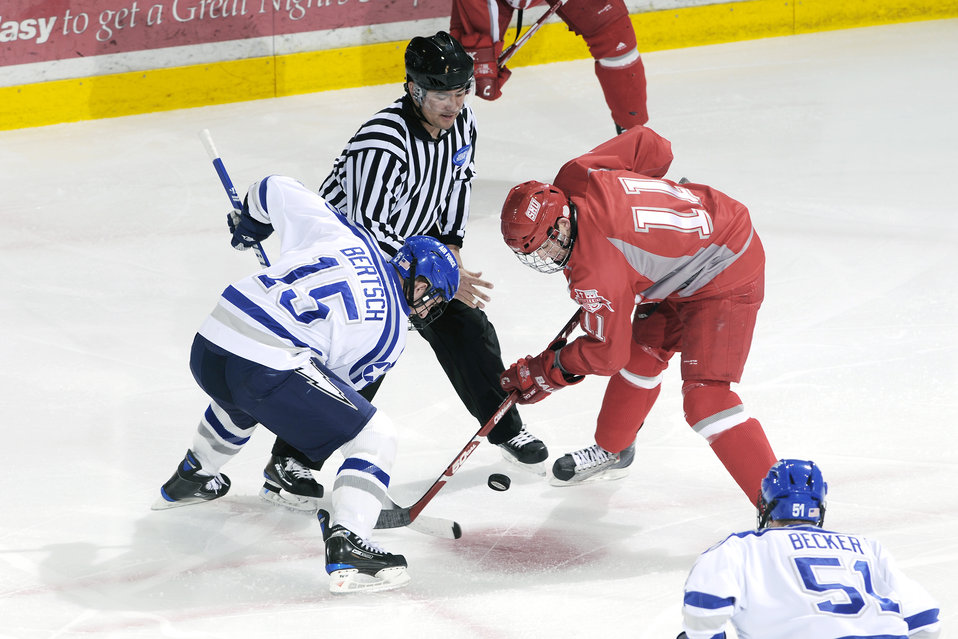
Falcons hockey team beats Pioneers

Air Force Academy junior forward Sean Bertsch faces off as the Falcons scored a season high eight goals, beating the Sacred Heart Pioneers 8-1 Feb. 27, 2010, at the Cadet Ice Arena. The victory clinched third place in the Atlantic Hockey Association, improving to 14-14-6 overall and 14-8-6 in the AHA.